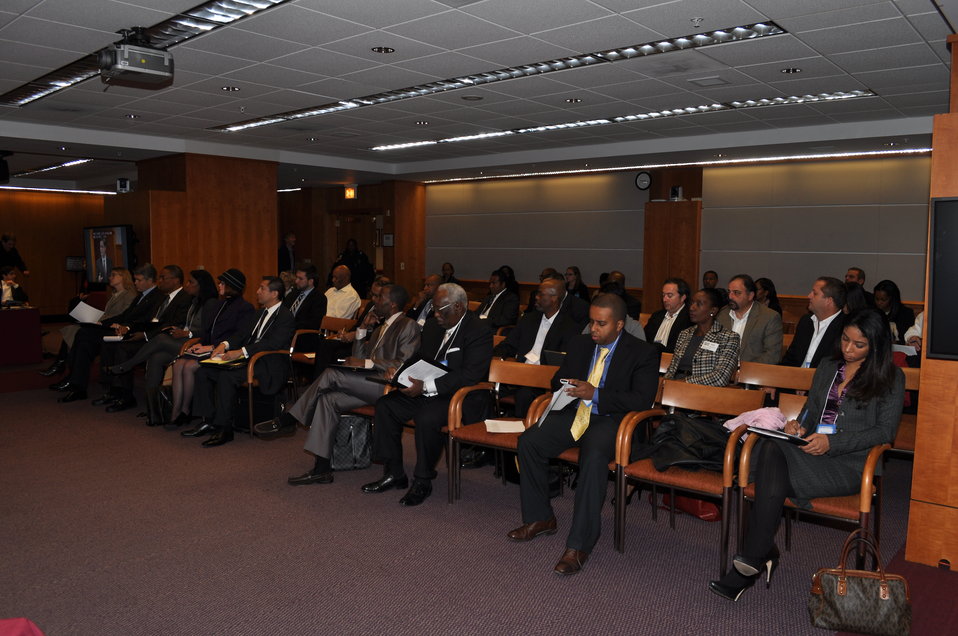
Capitalization Strategies

Workshop for small, minority and women owned businesses. Hosted by the Office of Communications Business Opportunities